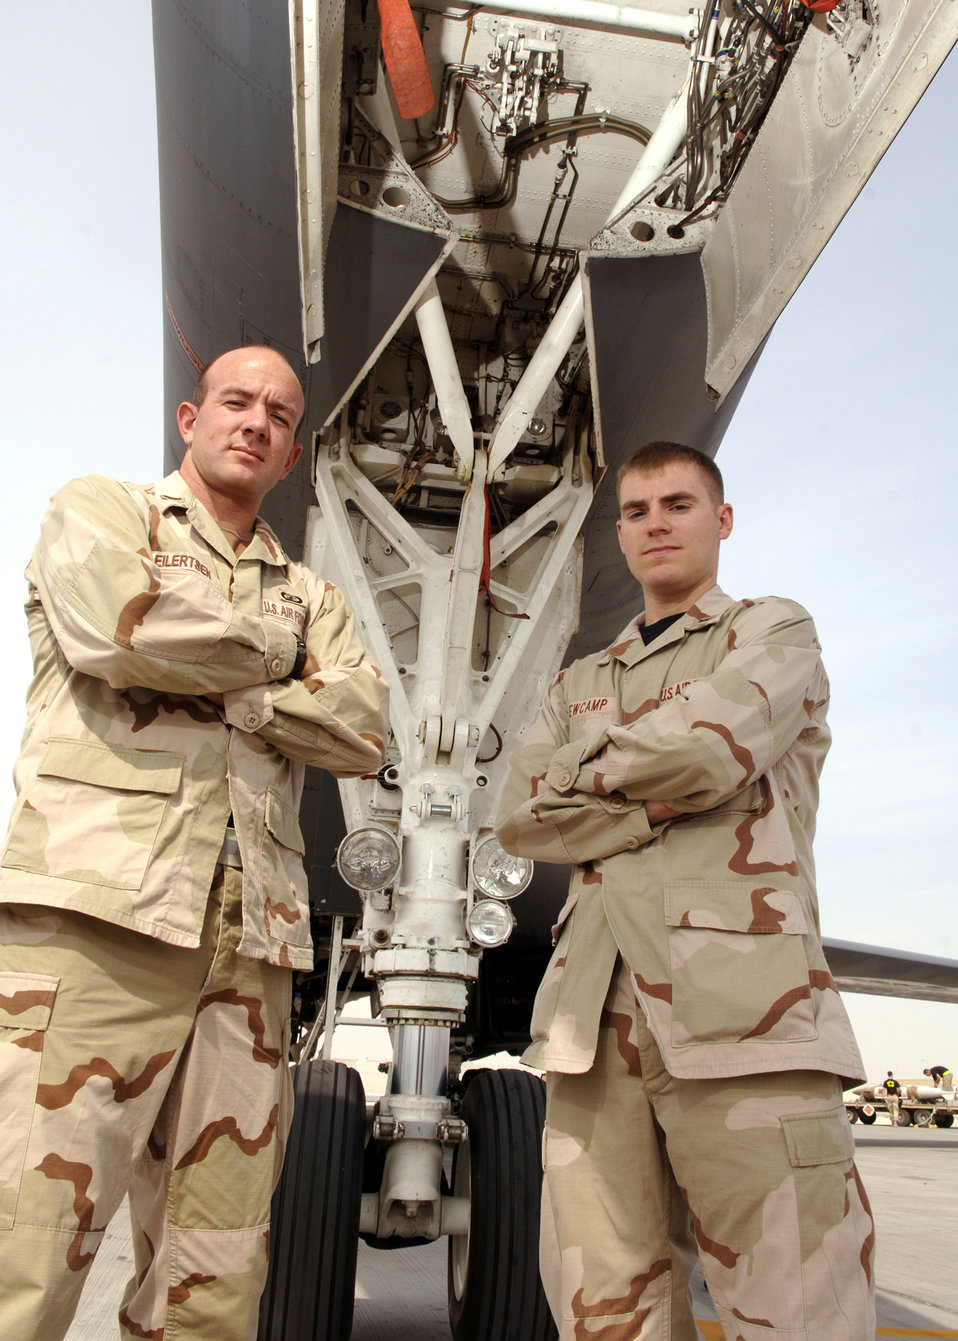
Depot liaison engineers support aircraft maintenance units

Second Lt. Mark Eilertsen and 1st Lt. Jeffrey Newcamp, depot liaison engineers with the 379th Expeditionary Maintenance Operations Squadron, pose in front of a B-1 Lancer at a base in Southwest Asia.